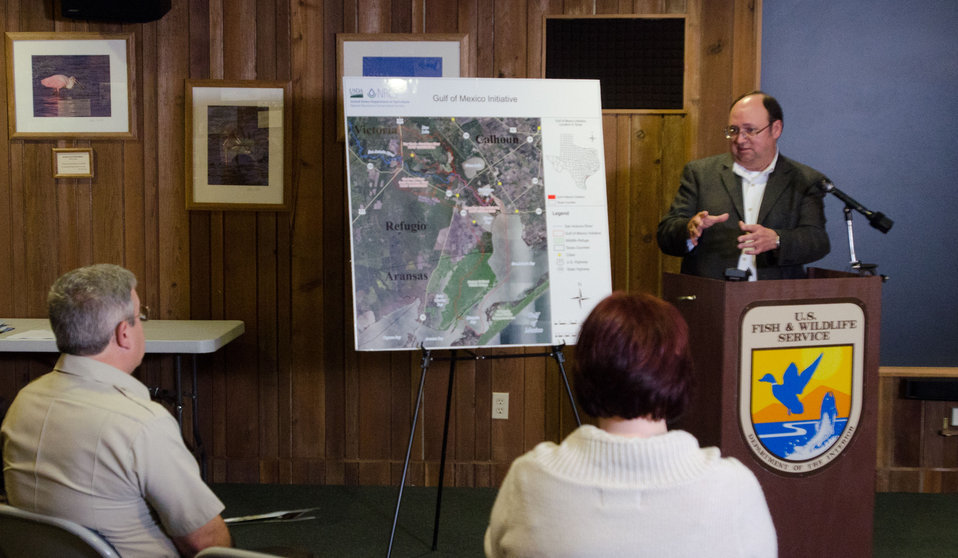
U.S. Department of Agriculture (USDA) Natural Resources Conservation Service (NRCS) State Conservationist Salvador Salinas with Federal and state partners, including representatives from U.S. Fish and Wildlife Service and local soil and water conservation districts (SWCDs) held a press conference at the Aransas National Wildlife Refuge, in Austwell, TX, on Friday, Dec. 16, 2011. Salinas covered the recent announcement of the USDA-NRCS Gulf of Mexico Initiative (GoMI) efforts to improve water quality, habitat, and the health of the Gulf ecosystem. “Launching this initiative is a top priority for NRCS in Texas because the Gulf of Mexico is one of our state’s premier natural resources. It provides vital habitat for wildlife, and creates jobs in industries that depend upon them. The health of this resource is essential to Texas as well as to the nation,” said Salinas.
The Texas initiative focuses on three watersheds in Refugio, Calhoun, Victoria and Aransas counties and ultimately the Gulf of Mexico. “What is really compelling about GoMI and other similar conservation efforts is that they prove that Texas farmers and ranchers not only feed and clothe us and power our vehicles, but they can also help protect and restore our rivers and provide more habitat for wildlife,” stated Salinas. “That’s why it is important that this conservation project is not about taking productive farm land out of production. This is a working lands initiative, so that not only are we helping to restore the health of the Gulf, but we’re also helping to sustain and enhance the productivity of the Gulf’s farms and ranches.”